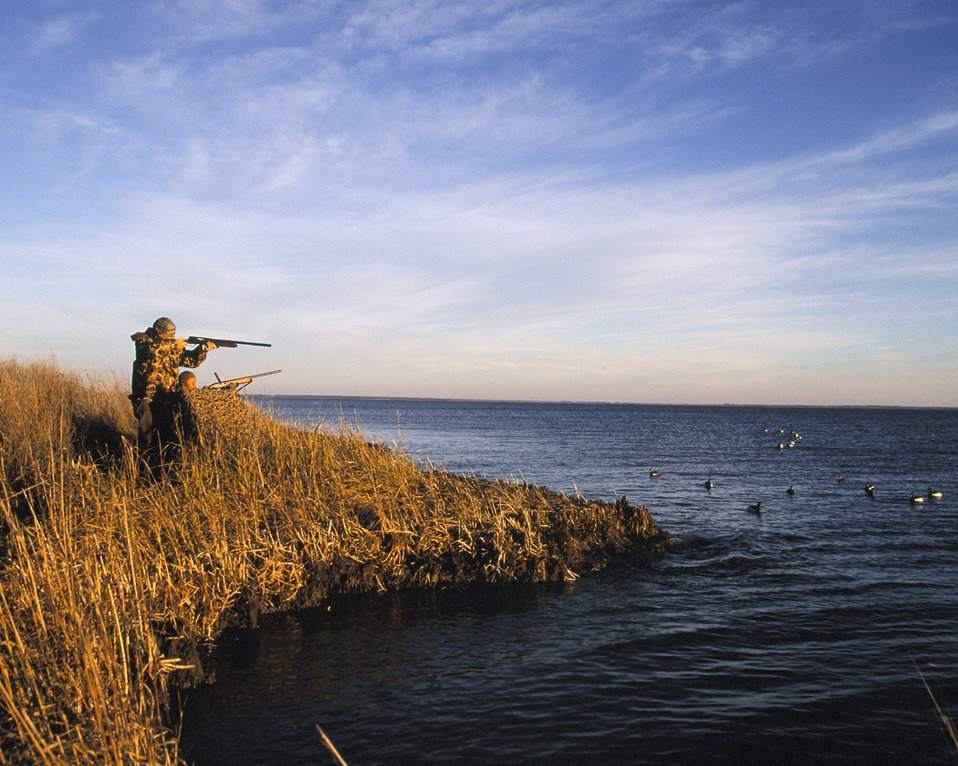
Waterfowl hunting at Swanquarter Refuge

Waterfowl hunters dressed in camouflage aim at a flock of birds in the saltwater marshes at Swanquarter National Wildlife Refuge in North Carolina. Many national wildlife refuges permit waterfowl hunting as a traditional recreational use of renewable natural resources.